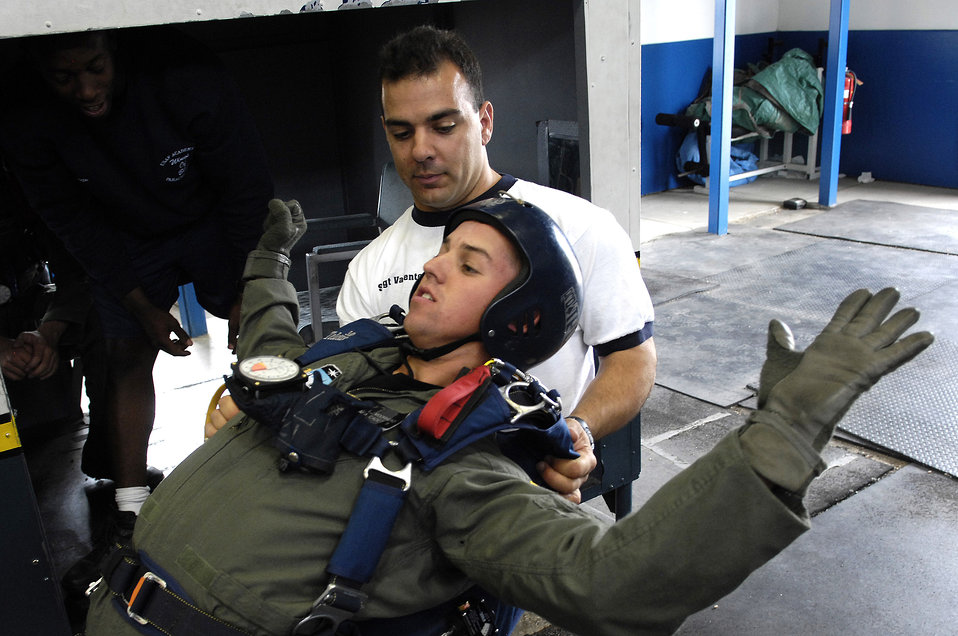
Earning those jump wings

U.S. Air Force Academy Cadet 3rd Class Cody Moorhead receives free-fall techniques training July 7 from Staff Sgt. Joseph Valente, an airmanship instructor, during Airmanship 490, Basic Parachuting, an airmanship program where cadets earn their basic jump wings after successfully completing five free-fall jumps.